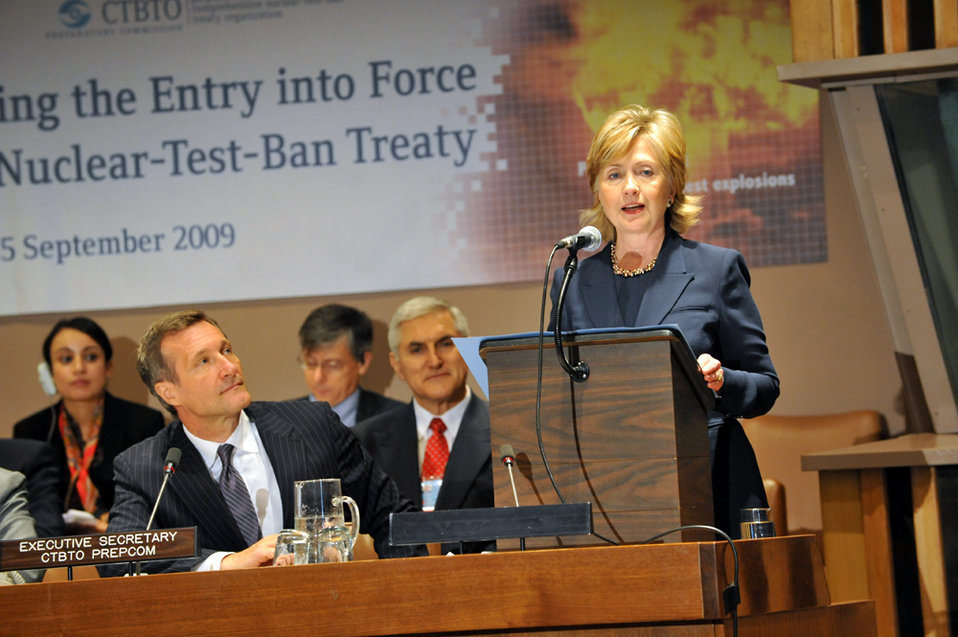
UNGA 2009: Comprehensive Nuclear-Test-Ban Treaty Conference

U.S. Secretary of State Hillary Rodham Clinton delivers remarks at the Comprehensive Nuclear-Test-Ban Treaty (CTBT) Article XIV Conference at the United Nations headquarters during the 64th Session of the UN General Assembly in New York City, New York September 24, 2009.